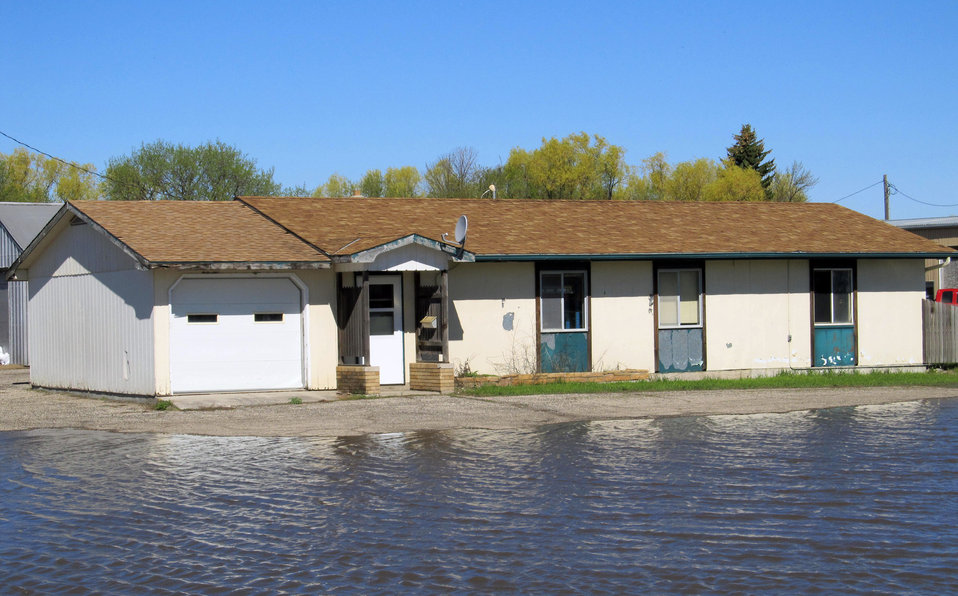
Flooding and water damage in the Park and Tongue River Watersheds located in Cavalier, Pembina and Cavalaier Counties in ND on Thursday, May 23, 2013.